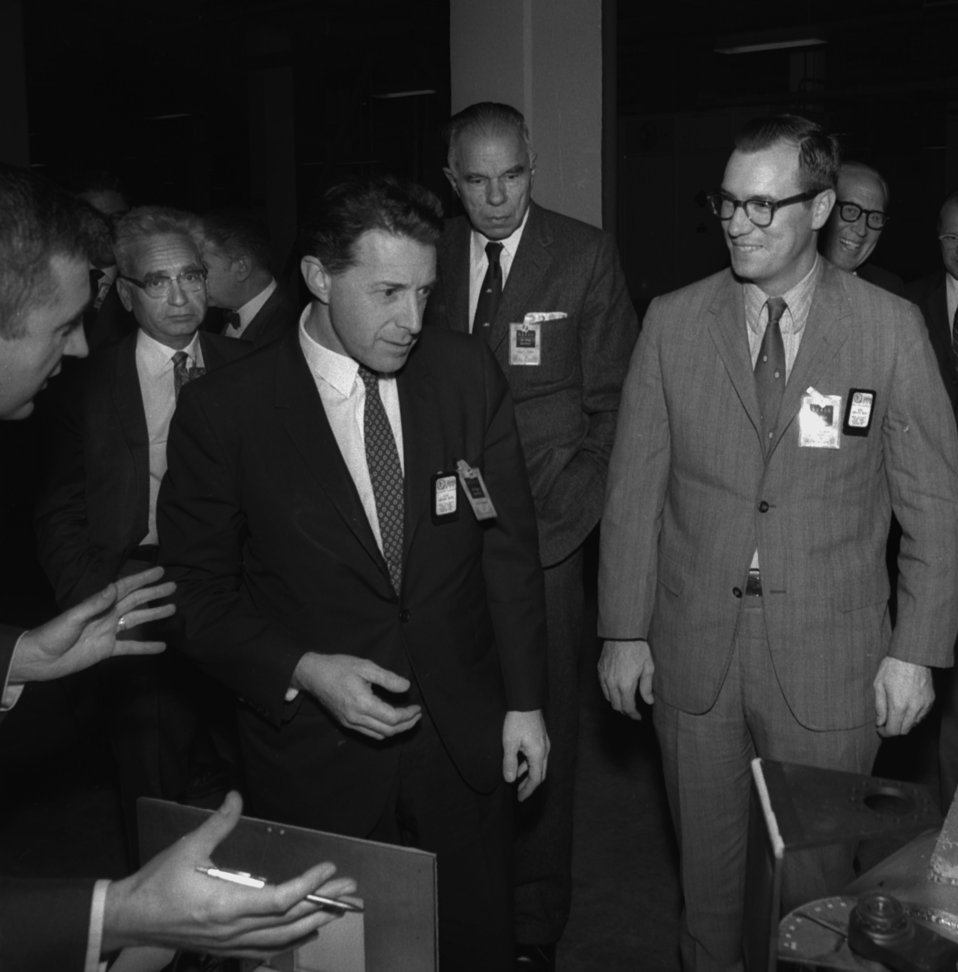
Casper Weinberg Visit to ORGDP

70-337 DOE photo by Frank Hoffman
Casper Weinberg Visit to Oak Ridge Gaseous Diffusion Plant Oak Ridge Tennessee 10-23-1970